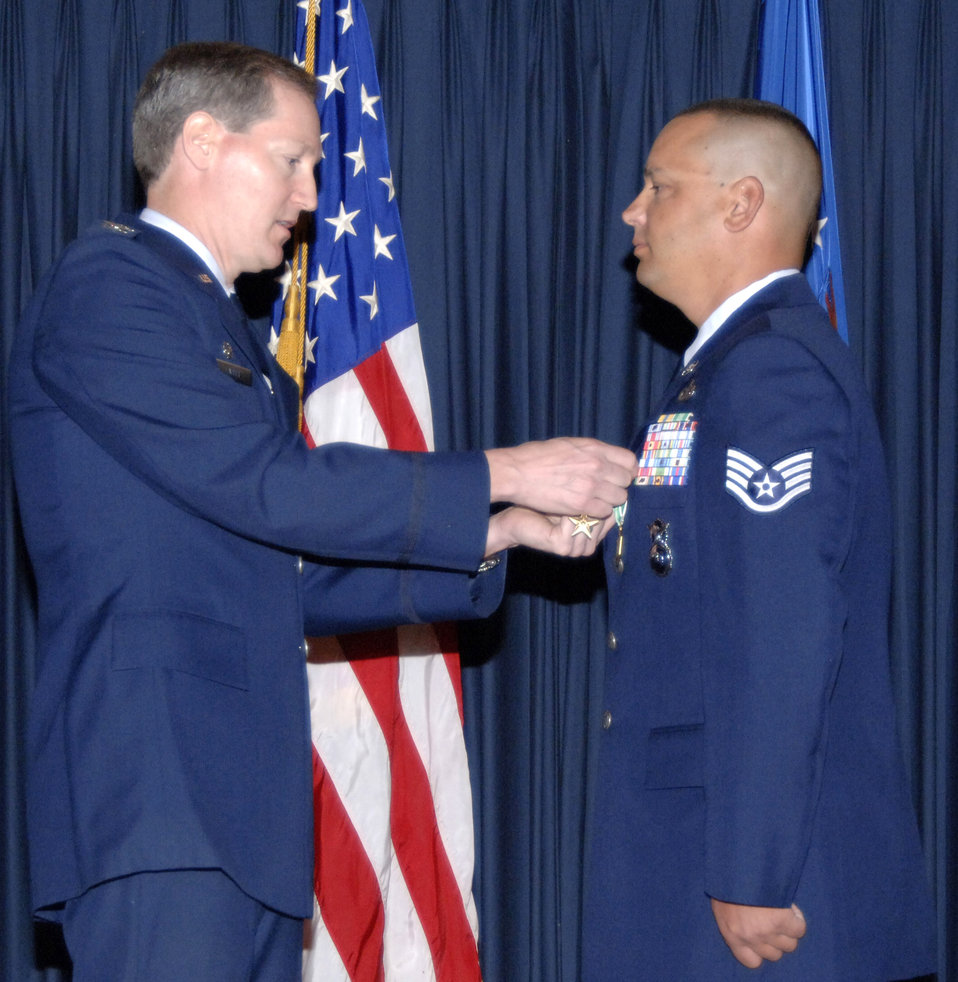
Security forces NCO earns Bronze Star with Valor

Staff Sgt. Jason Kimberling is awarded a Bronze Star with Valor and an Army Commendation Medal by Col. Thomas Laffey July 19 at Mountain Home Air Force Base, Idaho, for his actions Aug. 8, 2006 in Qalat Province, Afghanistan. Sergeant Kimberling was one of only three Americans in a coalition tasking with the Afghan national police that was attacked. His actions prevented the entire coalition force from being split up during an ambush. Sergeant Kimberling is assigned to the 366th Security Forces Squadron, and Colonel Laffey is the 366th Mission Support Group commander.